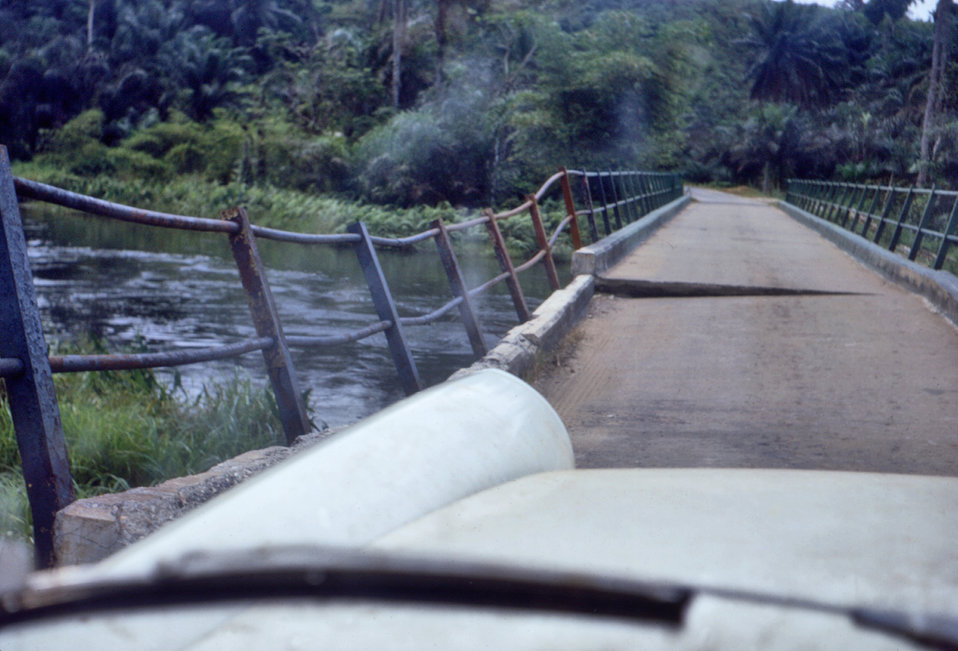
This photograph shows a badly damaged bridge in the Port Harcourt, Nigeria area during the Nigerian-Biafran civil war.